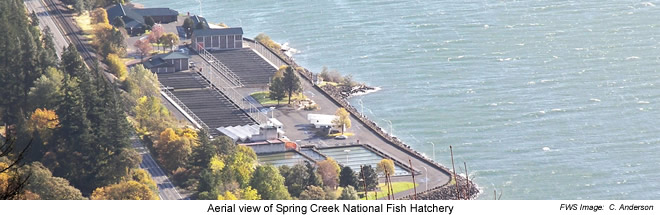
Aerial view of Spring Creek NFH